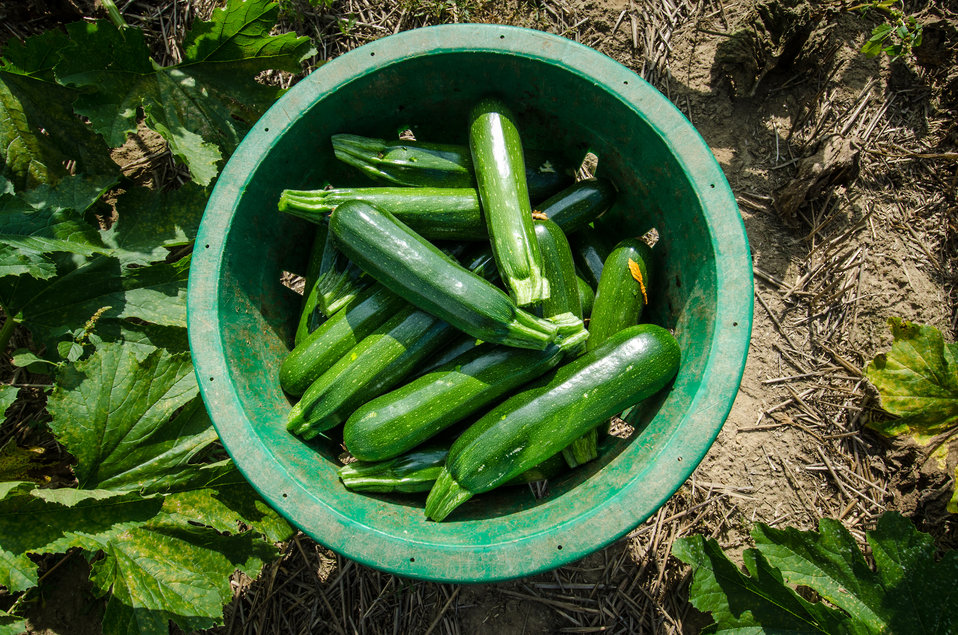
Just-picked green zucchini squash waits to be loaded onto a processing trailer at Kirby Farms in Mechanicsville, VA on Friday, Sep. 20, 2013. Migrant workers will carefully rinse and pack the fruit for shipment to wholesalers. Kirby Farms is a third-generation family farm that covers 500 acres and generates produce and grains on a year-around operation.